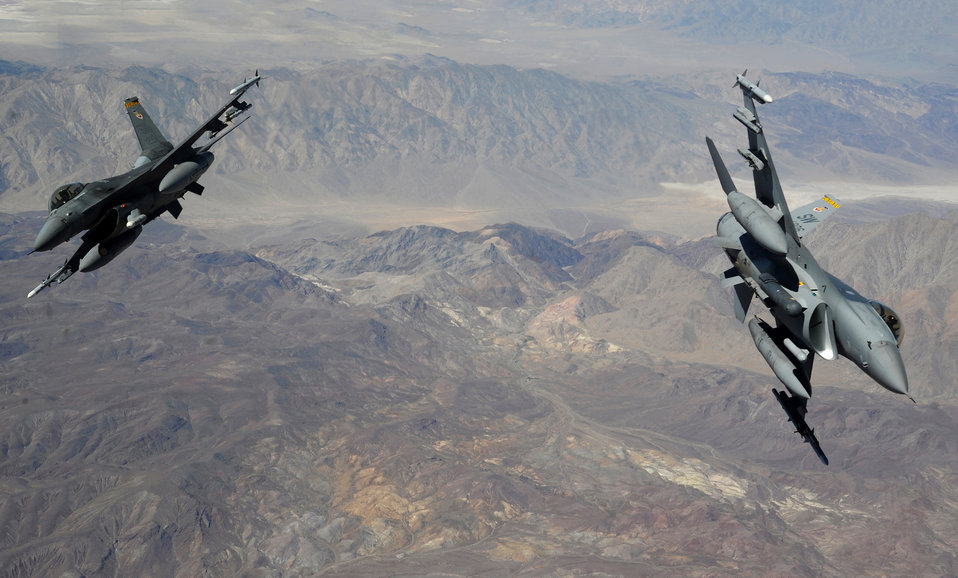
Falcons prepare to fight

Two F-16 Fighting Falcons break out of formation and head to the 'fight' April 27, 2011, during Green Flag West at Nellis Air Force Base, Nev.